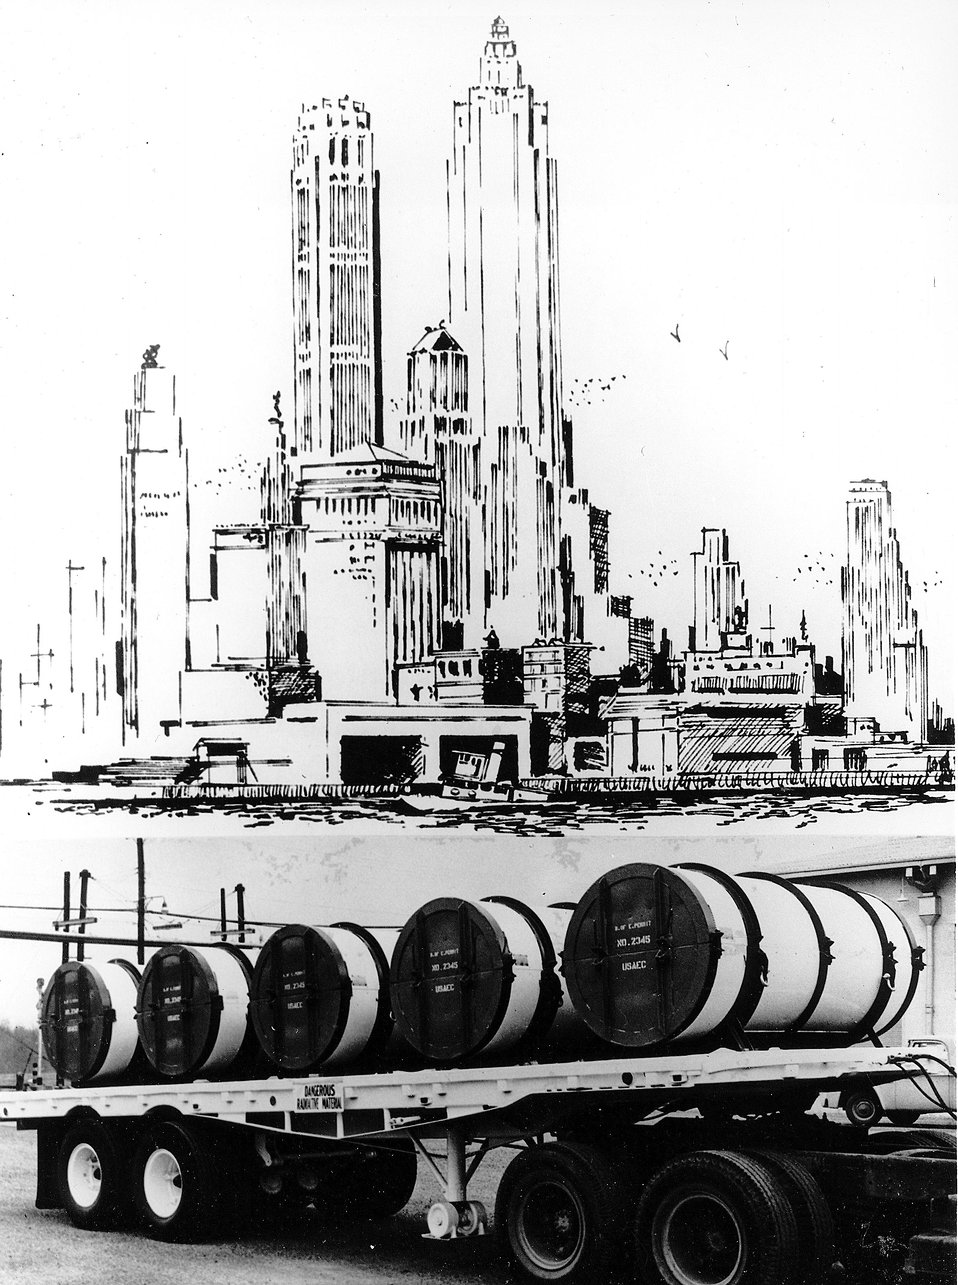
A single truckload of enriched U-235 (like this shipment from Oak Ridge Gaseous Diffusion Plant) can supply the total electrical power needs for a city of 200,000 people for an entire year. Circa 1968.